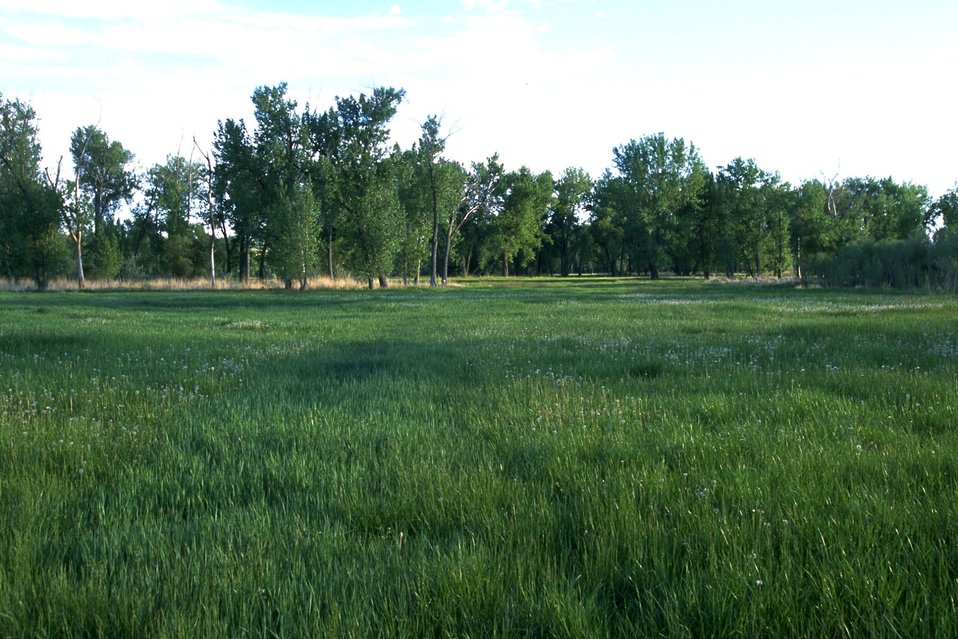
Cottonwood tree grove and flood plain meadow in the Sundance Lodge Recreation near the Clark's Fork of the Yellowstone River